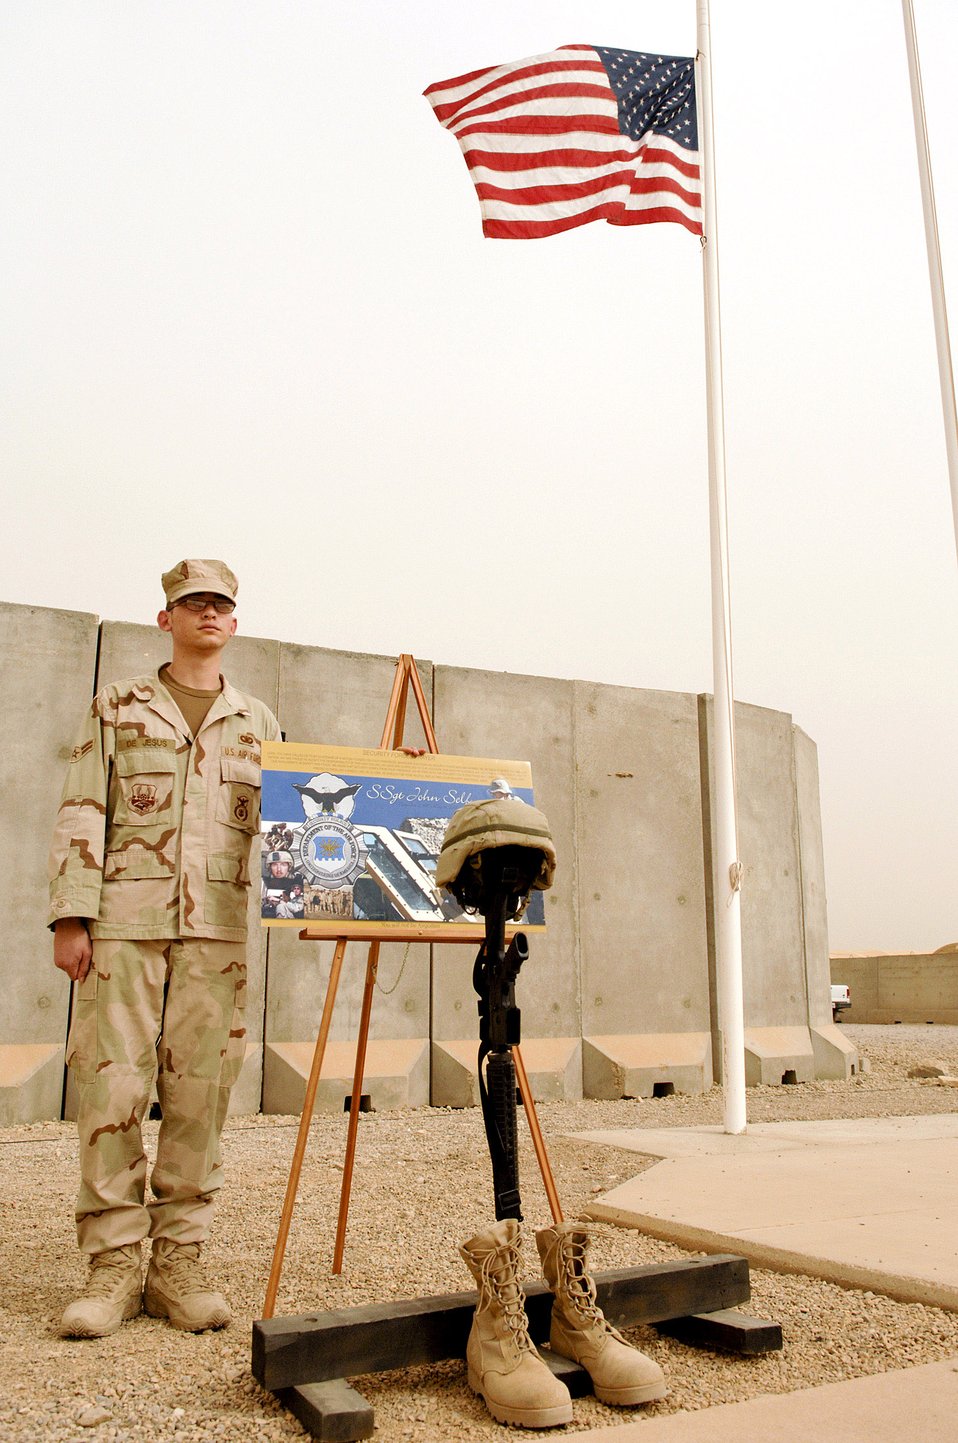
Honoring a fallen Airman

Airman 1st Class Zachary DeJesus, 407th Expeditionary Security Forces Squadron stands watch over the memorial of Staff Sgt. John Self during a fallen Airmen ceremony May 28 at Ali Air Base, Iraq. Sergeant Self, a security forces member assigned to the 732nd Expeditionary Security Forces Squadron at Camp Bucca, Iraq, was killed May 14 by an improvised explosive device while on patrol.